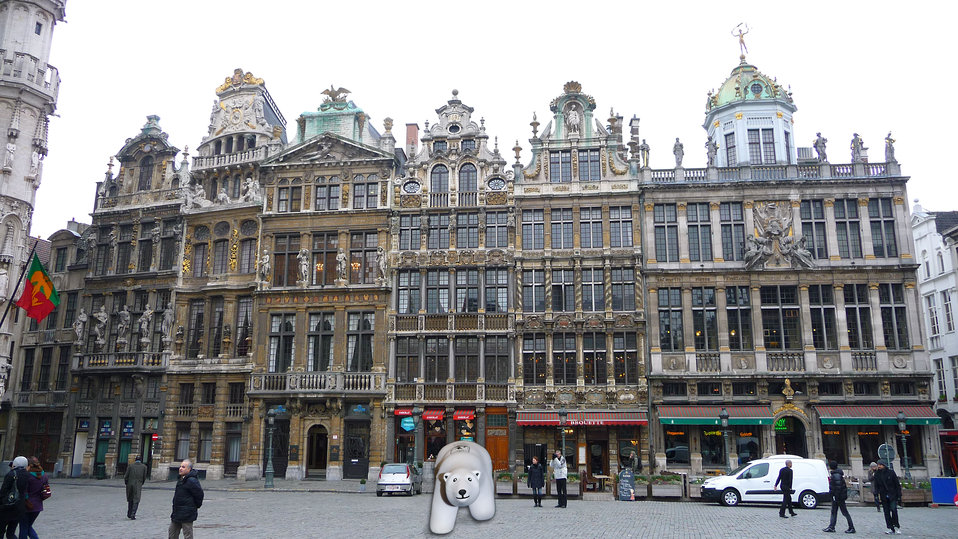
Brussels, Belgium

The fourth and final stop on our polar bear’s journey takes him to the city with this lovely square. Voted the most beautiful square in Europe in 2010, it now holds a “flower carpet” made up of millions of begonias every two years! Where is our polar bear now?

Answer: The Grote Markt in Brussels, Belgium.

Original photo taken by Neil Thompson (CC BY-SA 2.0), Brussels, Belgium, 2011.